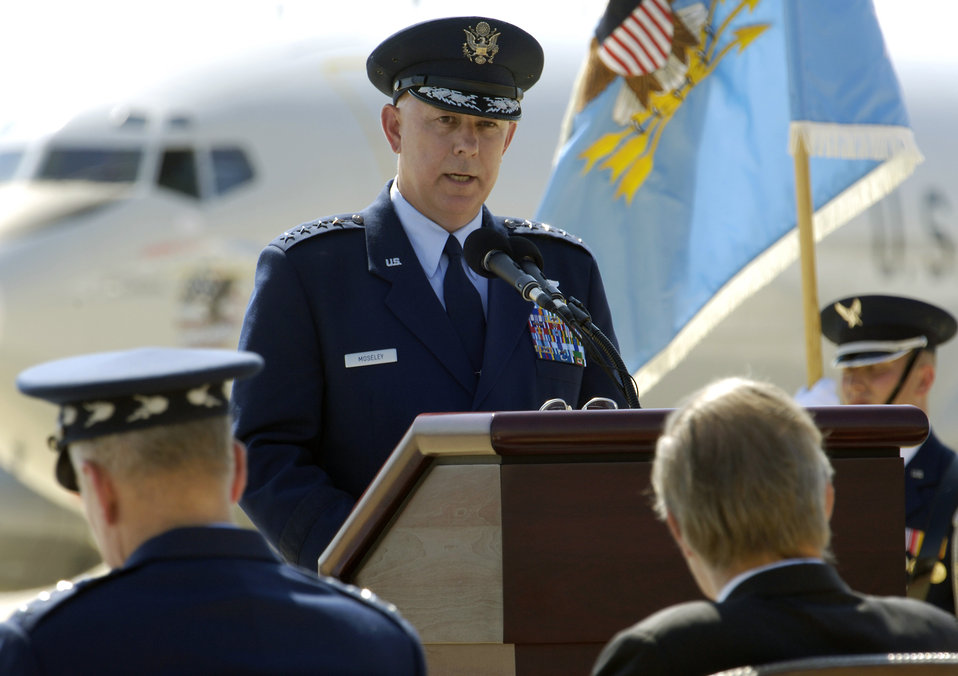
General Moseley swears in as Air Force's 18th chief of staff

ANDREWS AIR FORCE BASE, Md. -- Gen. T. Michael Moseley addresses the audience after being sworn in as the 18th Air Force chief of staff during a ceremony here Sept. 2. General Moseley served as vice chief of staff of the Air Force before being sworn in as the 18th Air Force chief of staff.